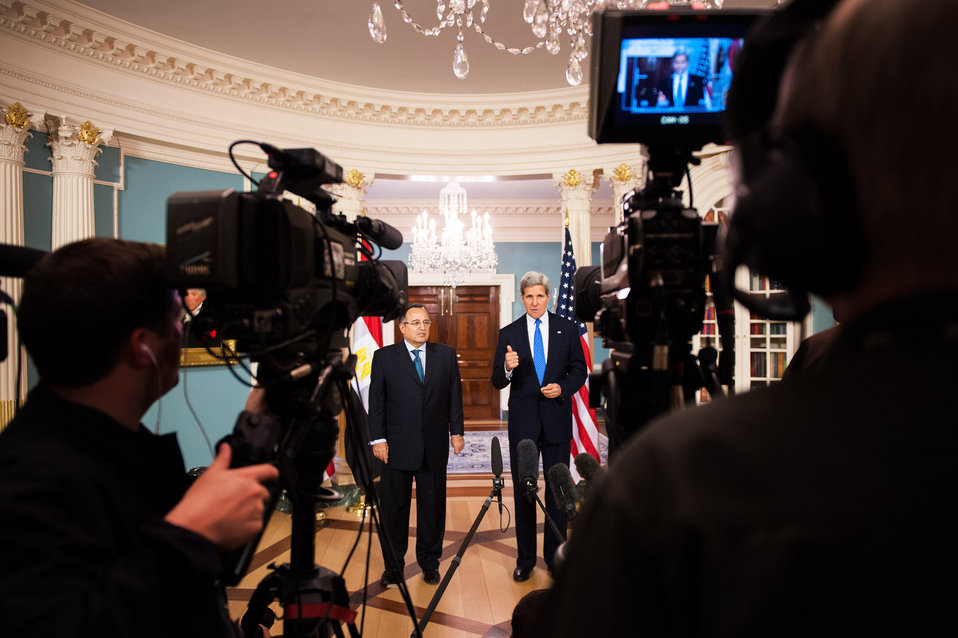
Secretary Kerry and Egyptian Foreign Minister Fahmy Address Reporters

U.S. Secretary of State John Kerry and meets with Egyptian Foreign Minister Nabil Fahmy address reporters before their bilateral meeting at the U.S. Department of State in Washington, D.C., on April 29, 2014.